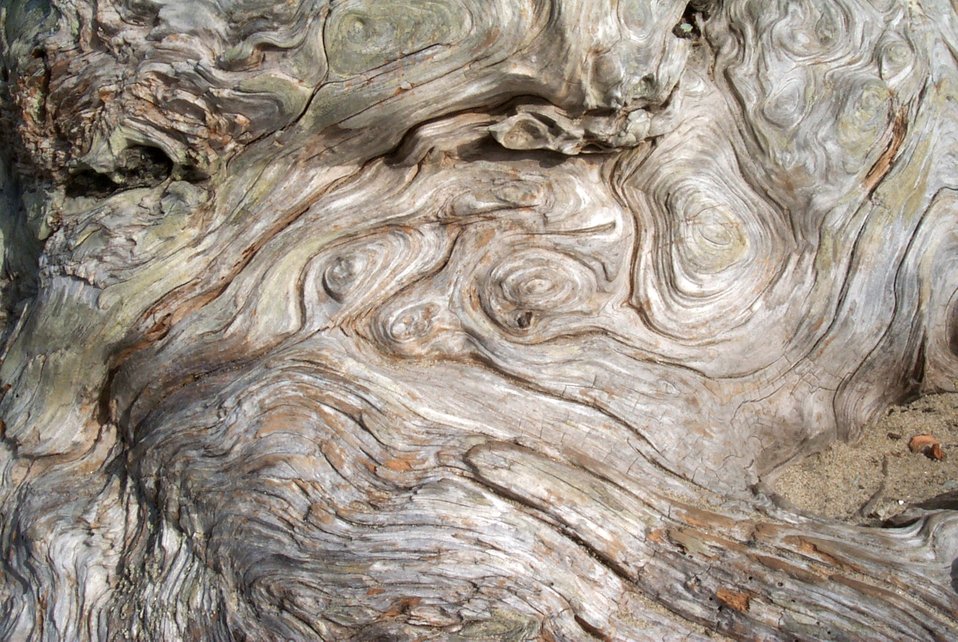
Driftwood patterns